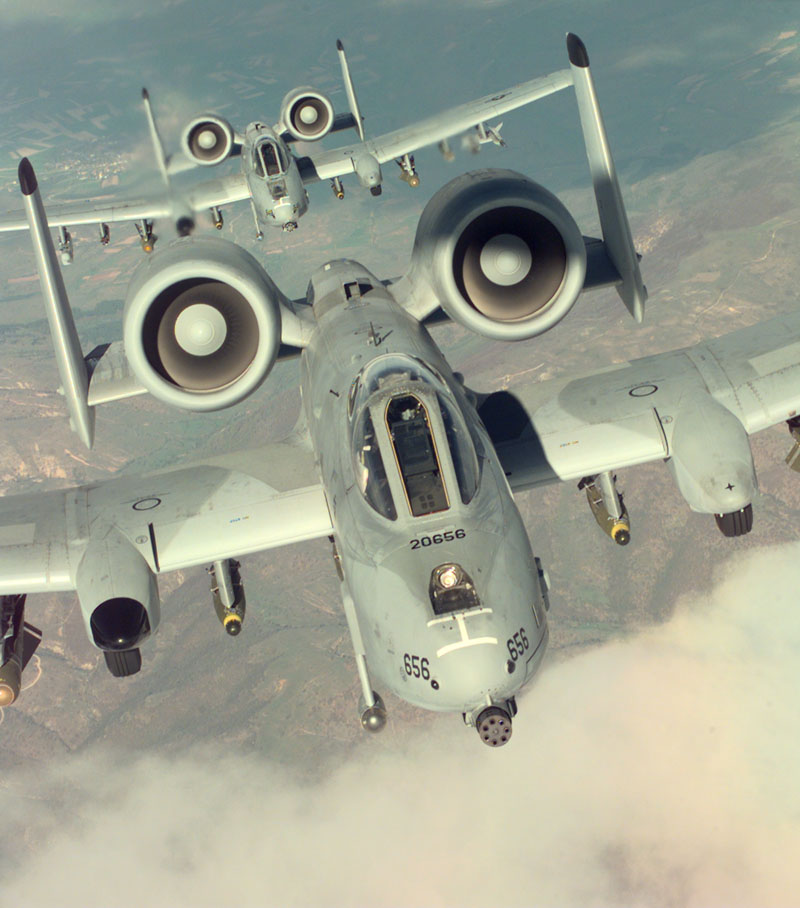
Warthog pair

1990's -- Two A-10 Thunderbolt IIs from the 52nd Fighter Wing, 81st Fighter Squadron, Spangdhalem Air Base, Germany, drop away from a refueling tanker during a NATO Operation Allied Force combat mission. The